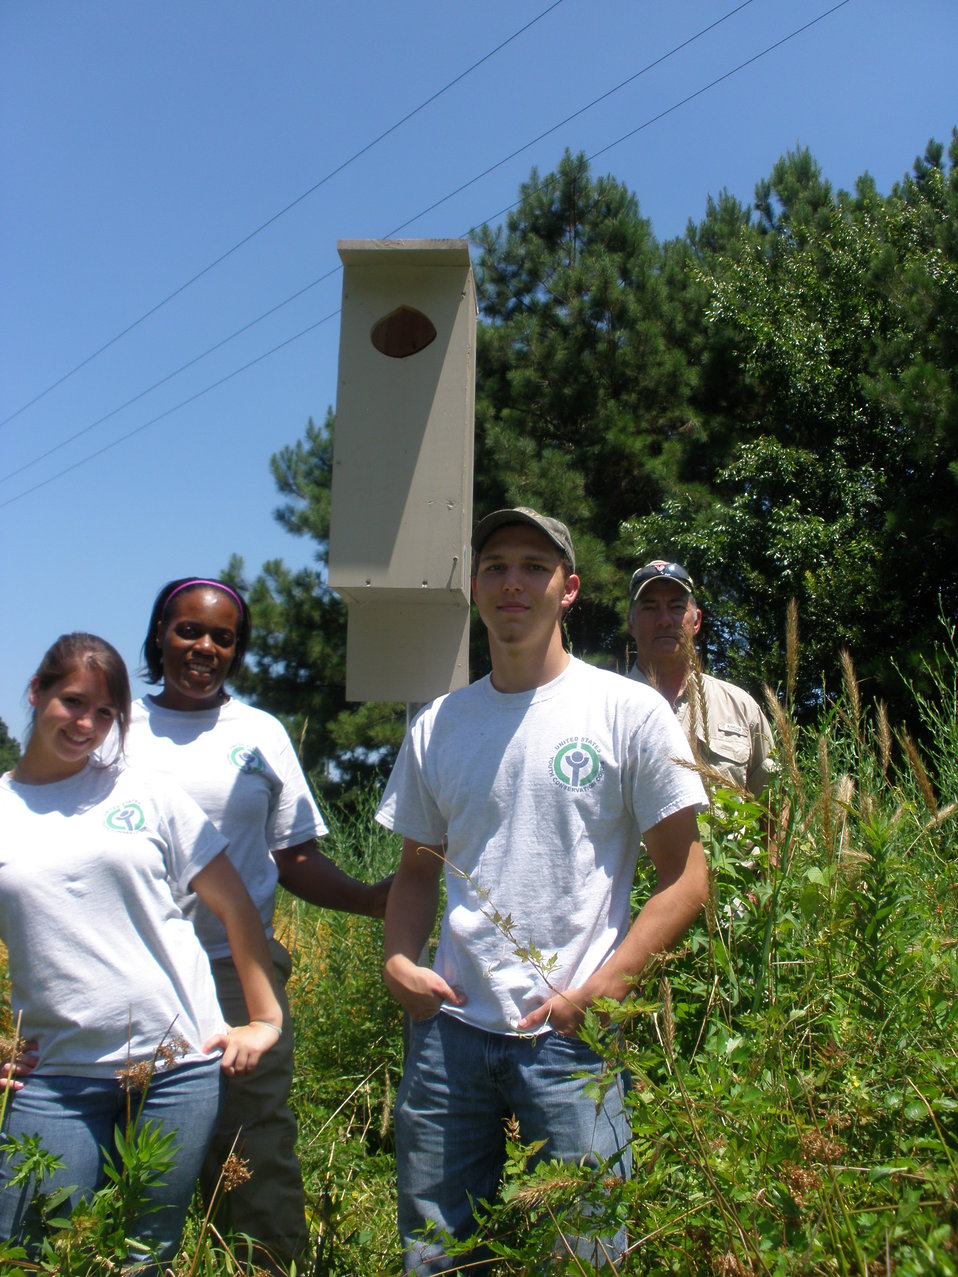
Caddo Lake National Wildlife Refuge, TX